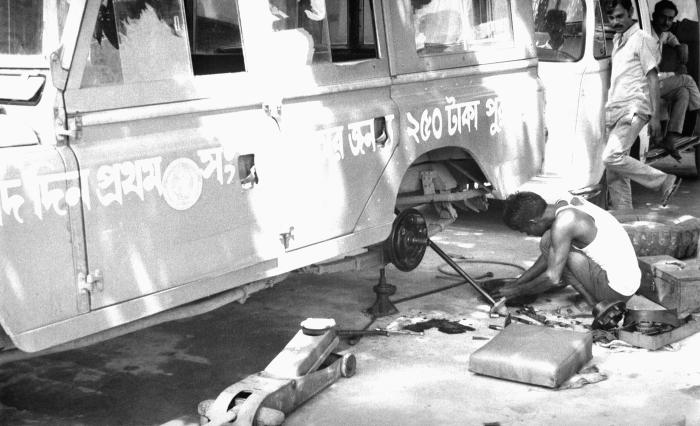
This image depicted a smallpox eradication team mechanic as he was repairing the left rear wheel assembly of a smallpox team transportation vehicle. This image was part of a series captured by Pierre Claquin, M.D., B.A.C., who at the time was a member of the World Health Organization's Smallpox Eradication Program. Provided by former E.I.S. officer, Stanley O. Foster M.D., M.P.H., it was one of a series entitled 'The Story of One Smallpox Jeep', depicting the travails faced by the jeep, and its occupants of public health practitioners, as they road through the Bangladesh countryside in an attempt to eradicate smallpox from the country.Modes of transport included walking, country boats, motorboats, launches, trains, motor scooters, and as evidenced here, all terrain vehicles (ATVs).